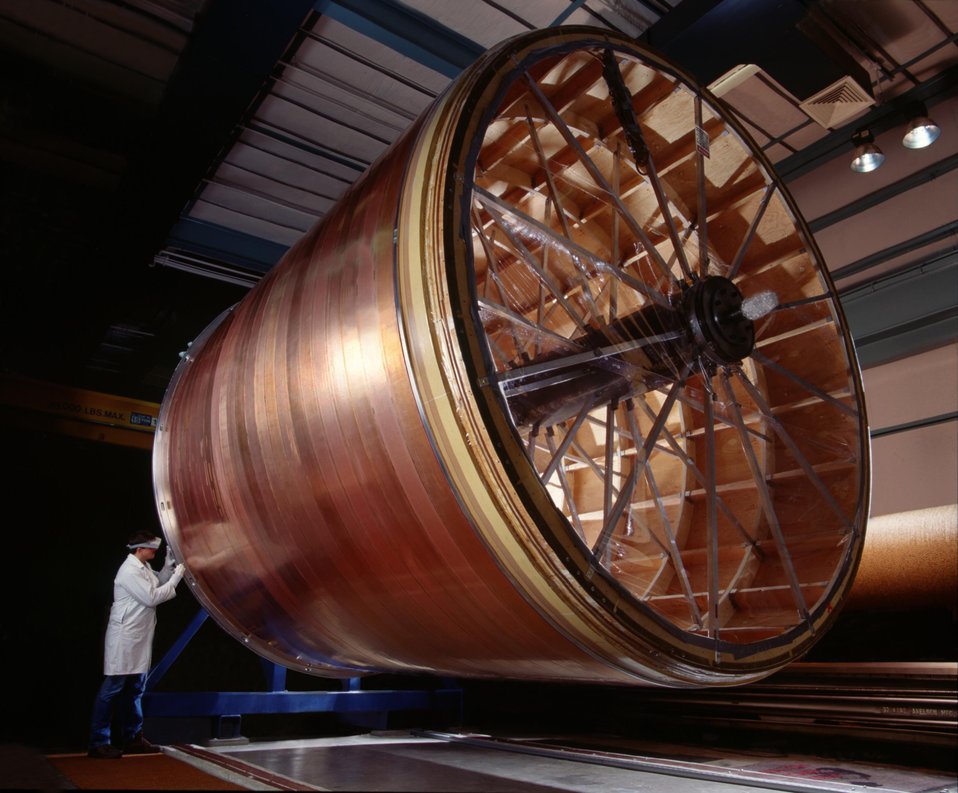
Relativistic Heavy Ion Collider (RHIC) at Lawrence Berkeley National Laboratory.

The STAR (Solenoidal Tracker at RHIC, Relativistic Heavy Ion Collider), is a massive detector system for studying of subatomic particles called hadrons. The RHIC built at Brookhaven National Lab. The STAR collaboration includes nearly 200 scientists and engineers from 26 institutions around the world.